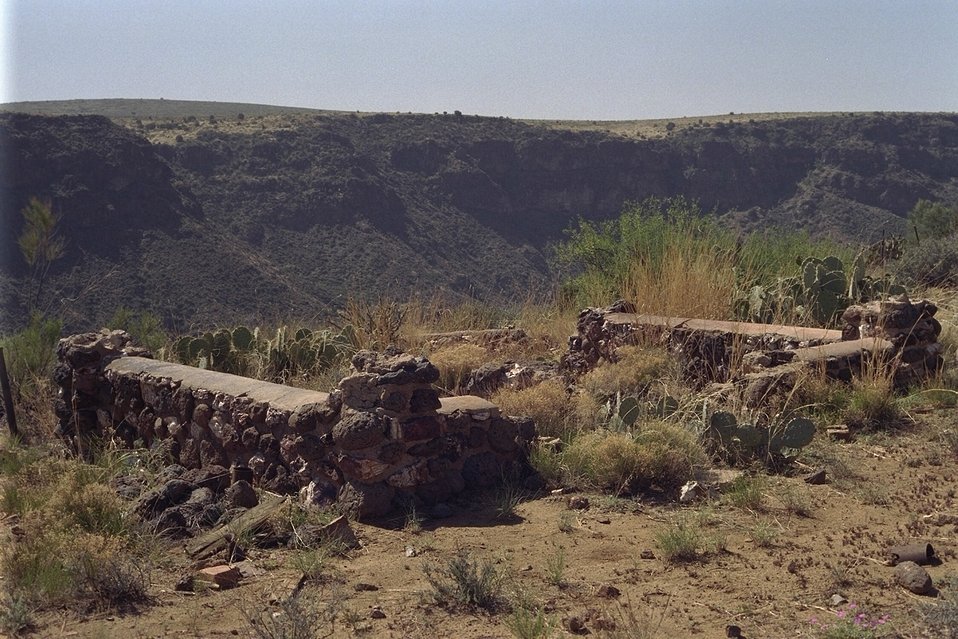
Cactus and Wildflowers grow throughout the 71,000 acres that make up the Agua Fria National Monument. In the background is the Agua Fria River Canyon.